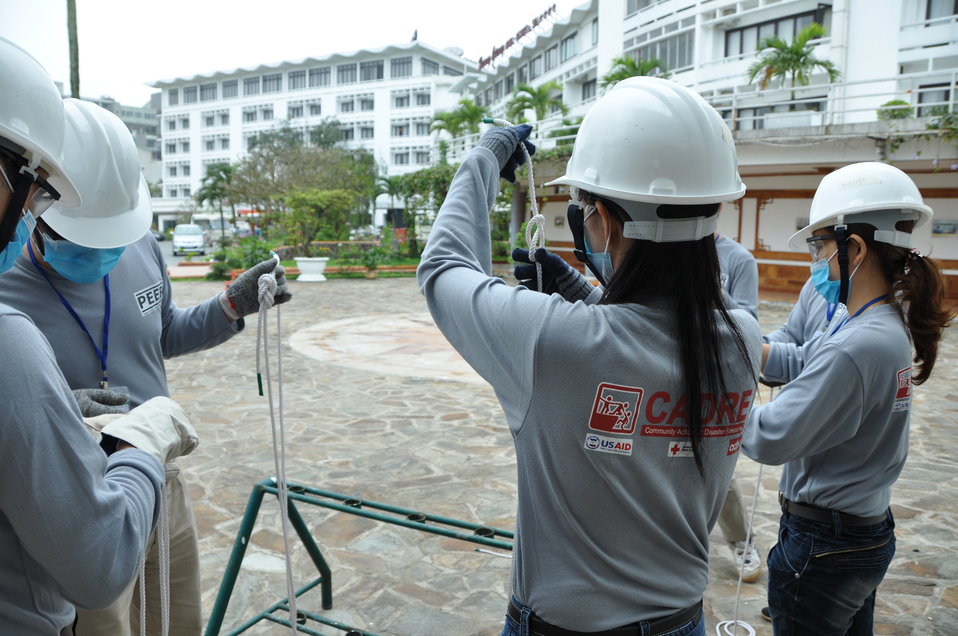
Disaster and Emergency Training Funded by USAID in Hue, Vietnam